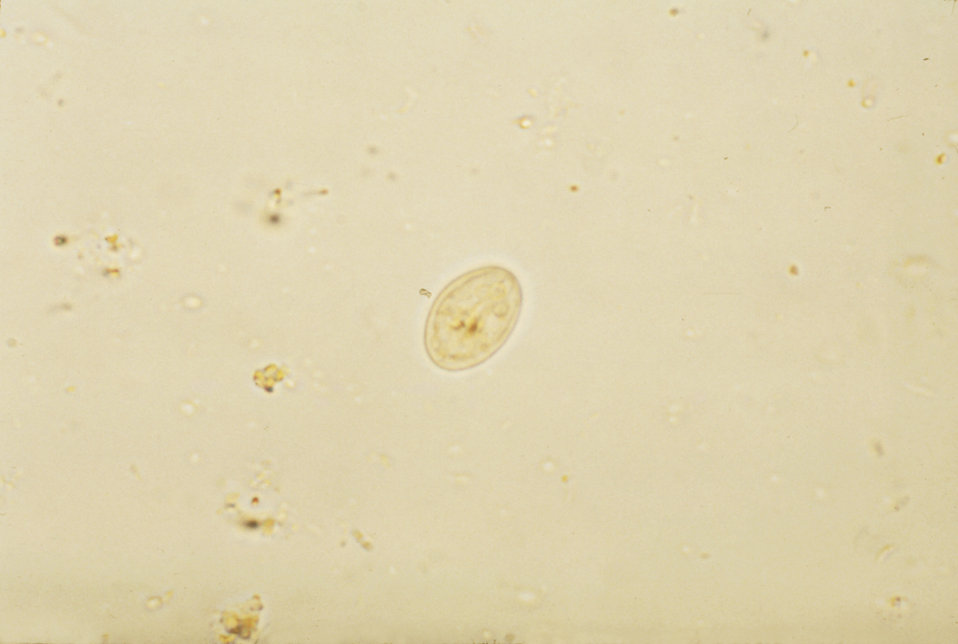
This photomicrograph reveals a cyst of a Giardia lamblia parasite using an iodine stain.